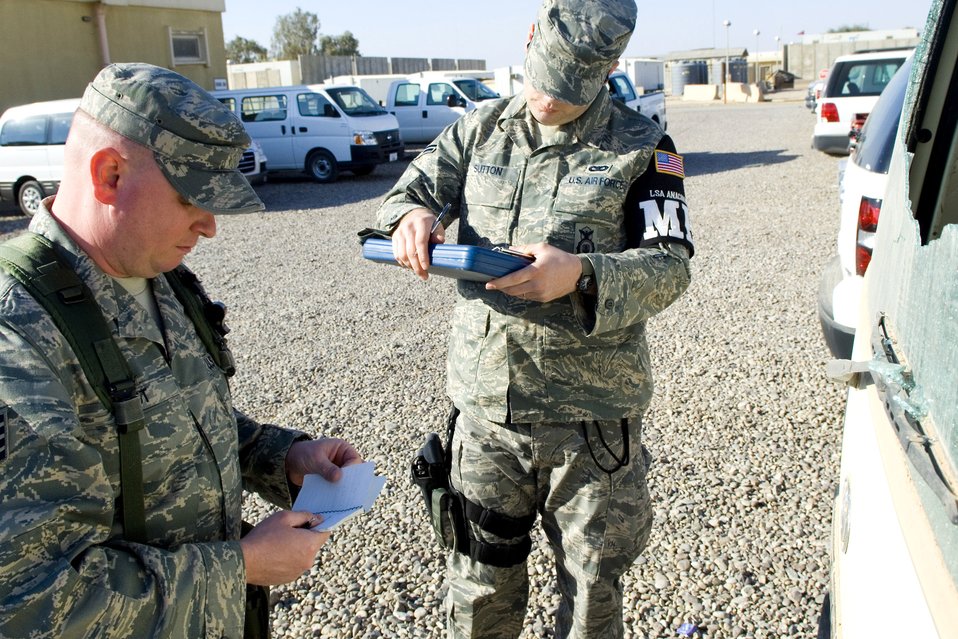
Balad Airmen keep order, maintain security

Airman 1st Class Brandon Sutton and Staff Sgt. Jeremy West take notes at the scene of a property damage incident Dec. 27 at Balad Air Base, Iraq. The sergeant said the call came after two gentlemen returned to their vehicle only to find the back window broken. Airman Sutton and Sergeant West, both 332nd Expeditionary Security Forces Squadron Det. 1 Provost Marshal Office patrolmen, are deployed from McConnell Air Force Base, Kan.